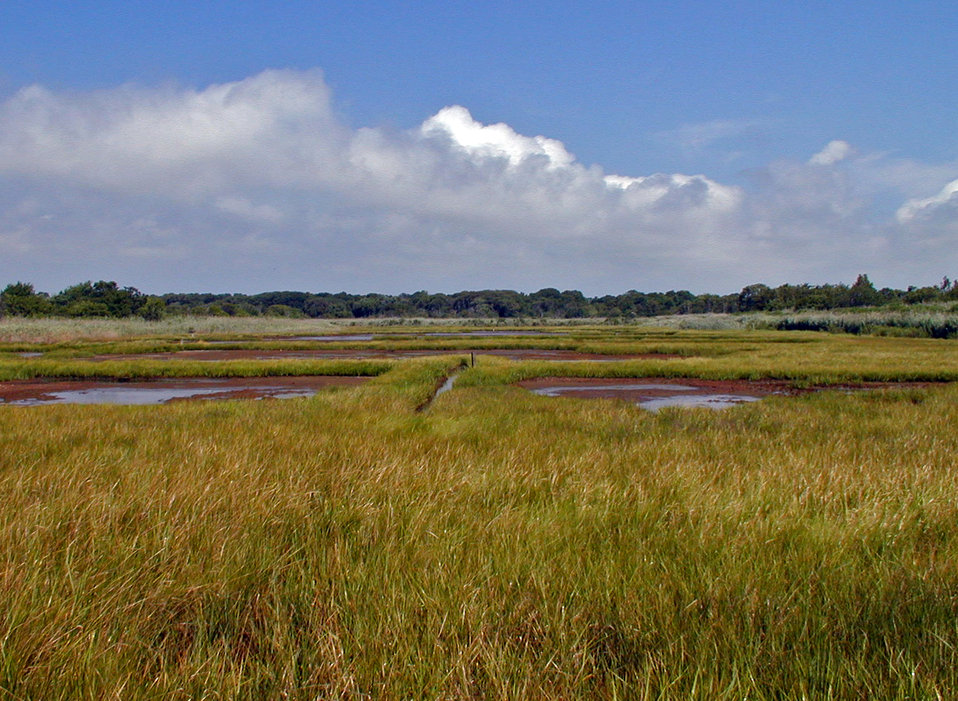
Seatuck marsh

Seatuck National Wildlife Refuge, NY.